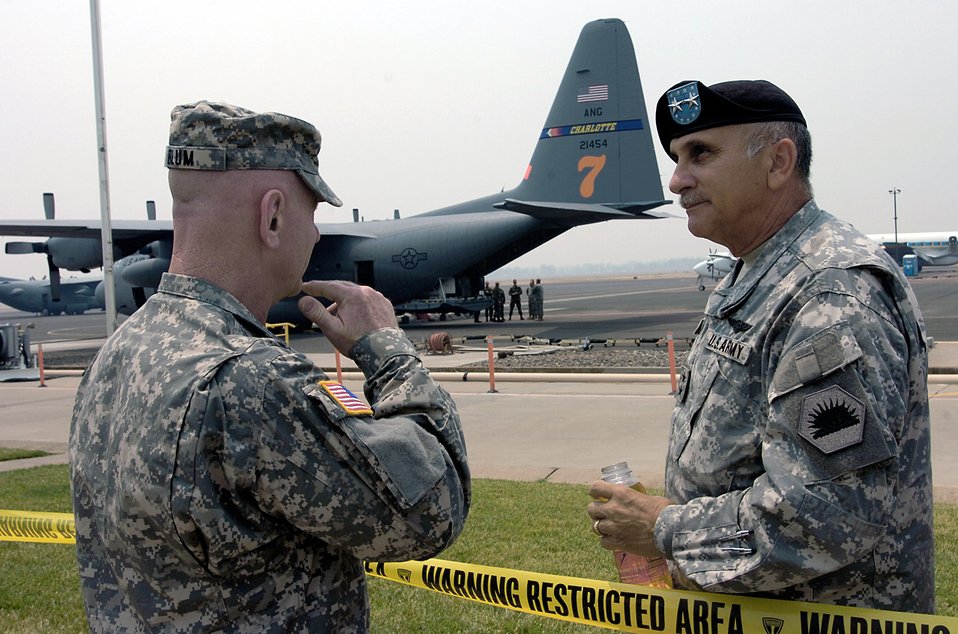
Guard chief: Firefighting and flood efforts 'outstanding'

Army Lt. Gen. H. Steven Blum overlooks the wildfire response operations of two North Carolina National Guard C-130 Hercules aircraft from the 145th Airlift Wing with Army Maj. Gen. William Wade June 26 on the airfield at Chico, Calif. General Blum is the chief of the National Guard Bureau, and General Wade is the adjutant general of California.